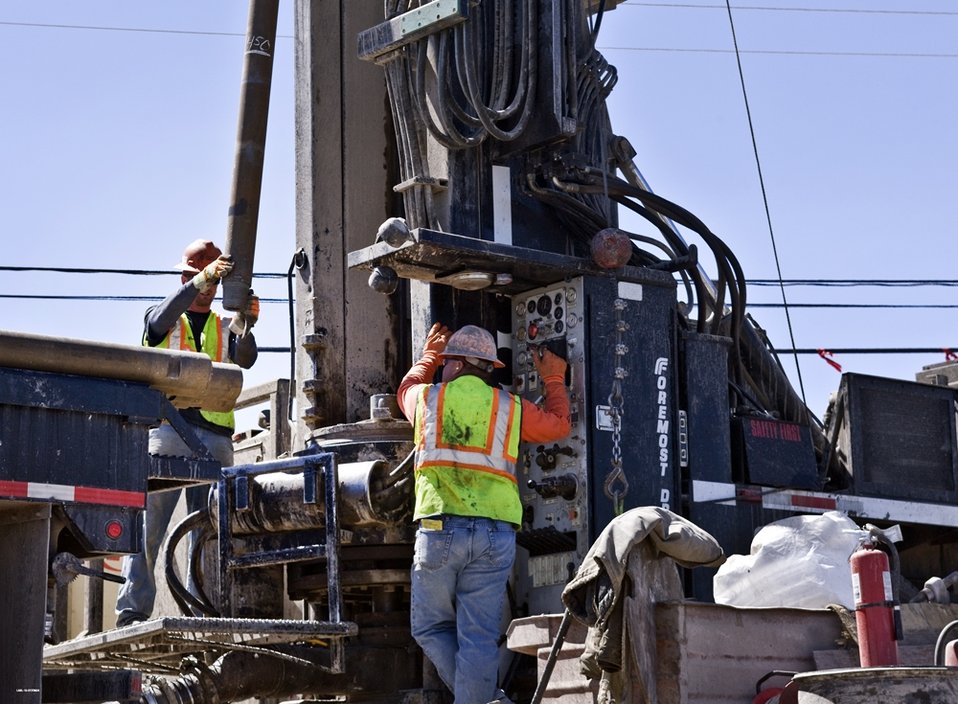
Wells Savings Finance Additional Well, Sampling Study

Part of the Recovery Act projects at Los Alamos National Laboratory was the installation of 16 groundwater monitoring wells. With the project nearing completion slightly more than a year later (2010), almost 10 percent of the overall budget was saved through efficient purchasing and construction and will be used for additional projects.